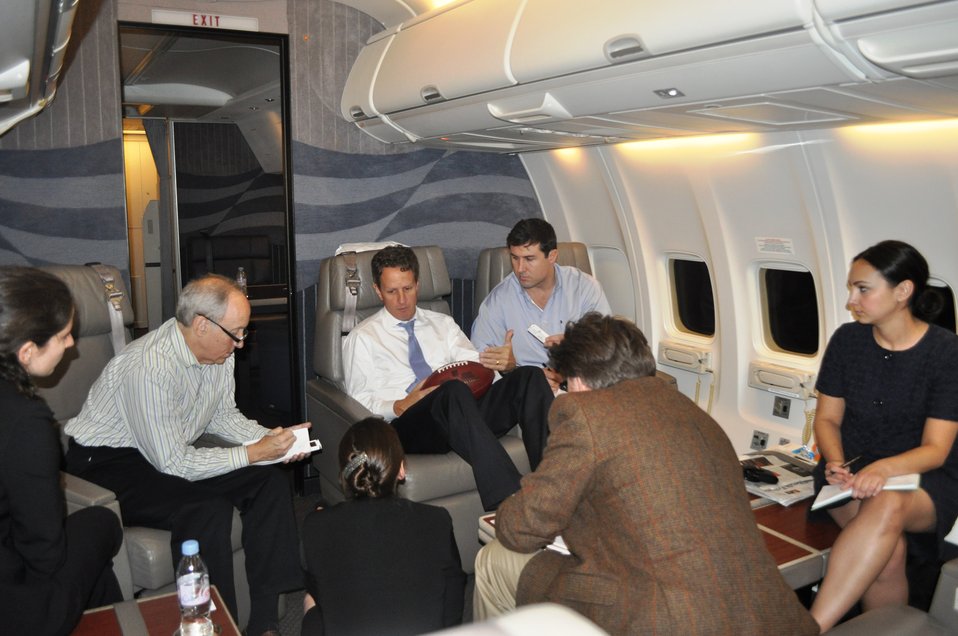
Geithner visit to Asia, November 4-12, 2010

Secretary Geithner with staff and reporters en route to Seoul, Korea.